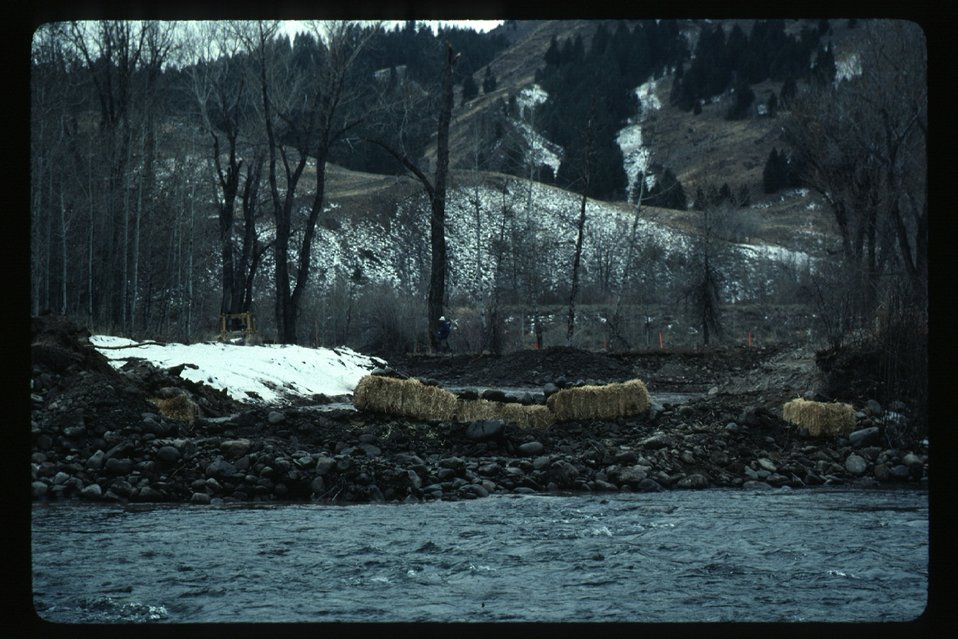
Wood River Rechanneling Recreation and Riparian Shoshone Field Office USRD Upper Snake River District